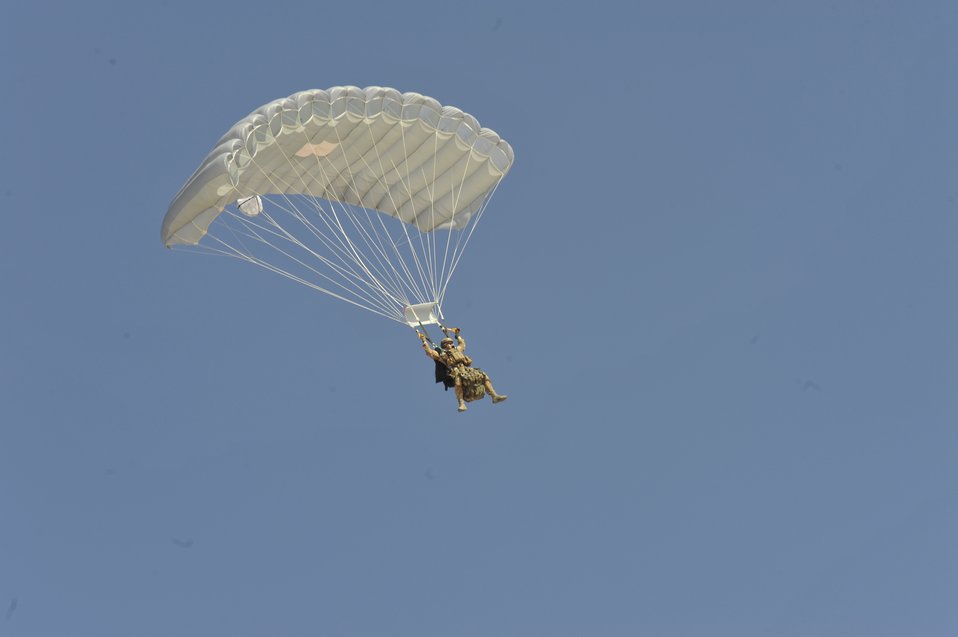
Heroes in training

Senior Airman Eric Humphrey, a pararescueman from the 82nd Expeditionary Rescue Squadron, parachutes during a training mission in the Grand Bara Desert, Djibouti, Oct. 21, 2011. The mission required the pararescue team to safely parachute into a simulated crash site, locate and treat casualties, and coordinate evacuation while maintaining security.